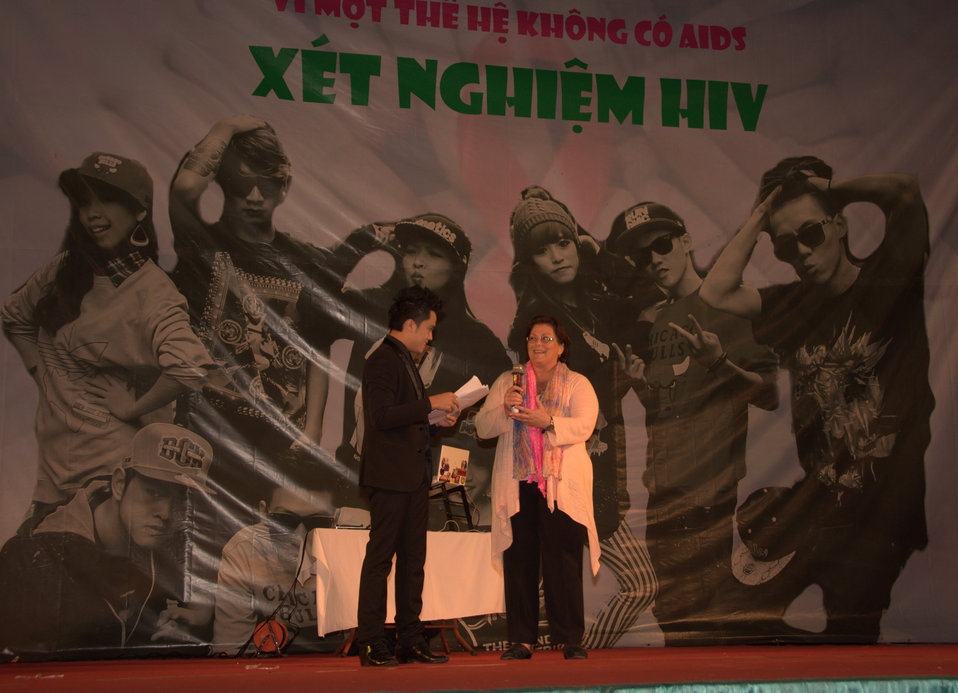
USAID and PEPFAR supports an outdoor concert to promote Vietnam's national action month for HIV

U.S. Embassy Deputy Chief of Mission Claire Pierangelo speaks to the audience a few minutes after she takes an HIV test at a mobile testing facility right on the site to send a clear and strong message about the importance of knowing one's HIV status and fighting stigma.

Hanoi, December 18, 2012.